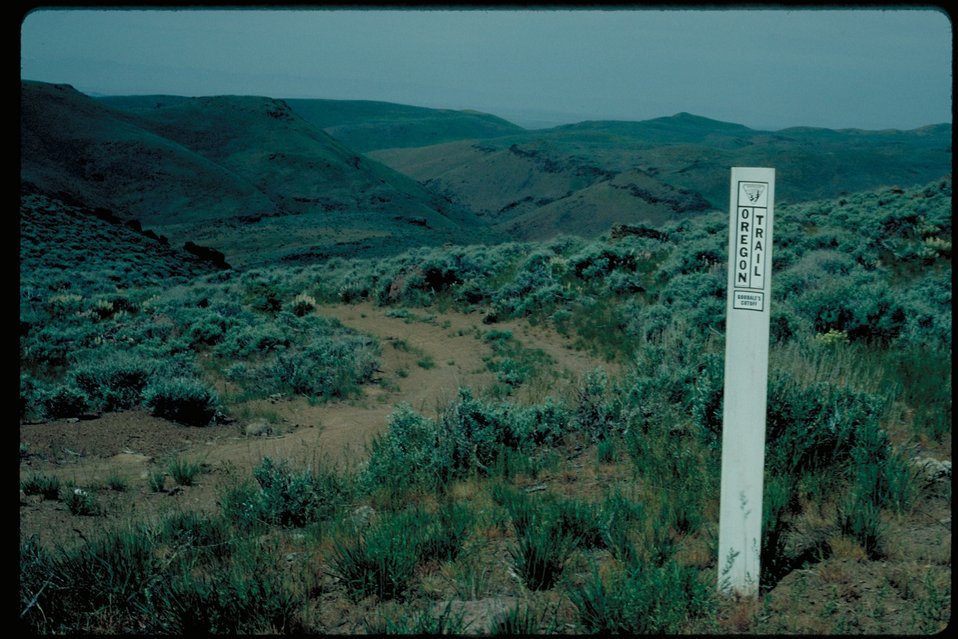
Goodales Cuttoff West of Cottonwood Springs Oregon Trail Lower Snake River District